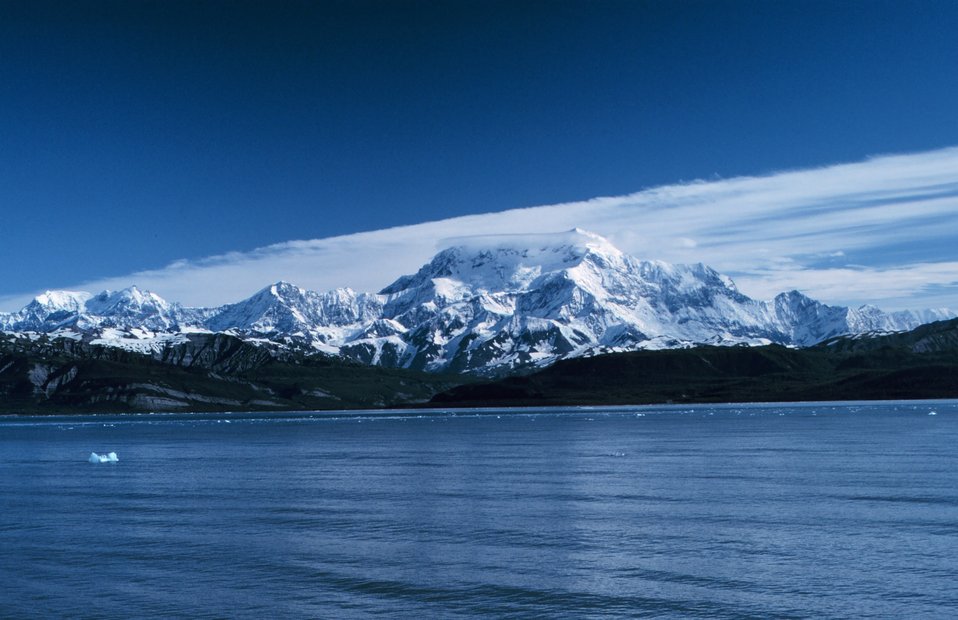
Photo #17 of Mount St. Elias sequence.